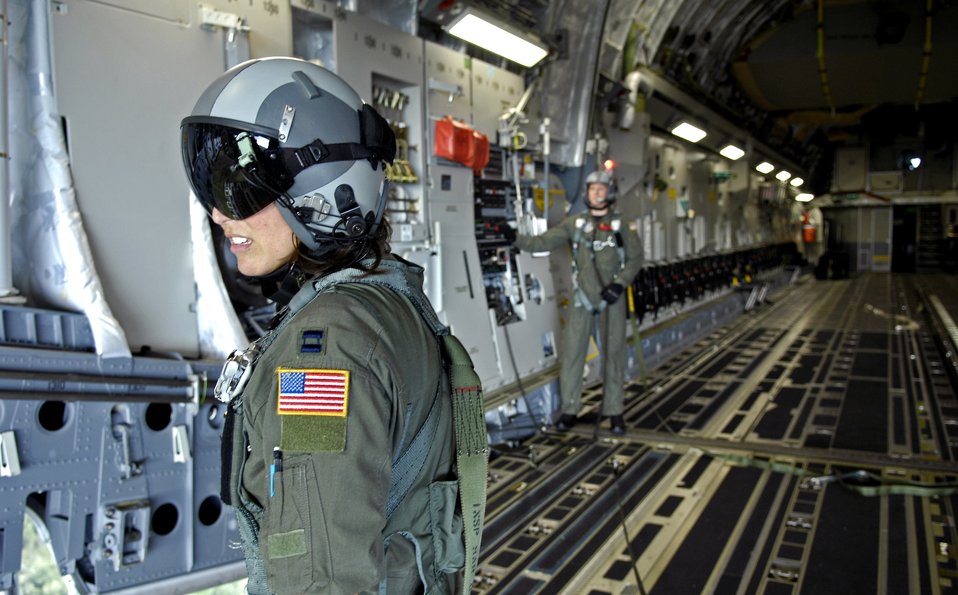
Airlift training

Capt. Stephanie Boff watches a practice bundle fall from a C-17 Globemaster III during an airdrop training mission July 16 over Hawaii. Captain Boff is a pilot with the 535th Airlift Squadron at Hickam Air Force Base, Hawaii.